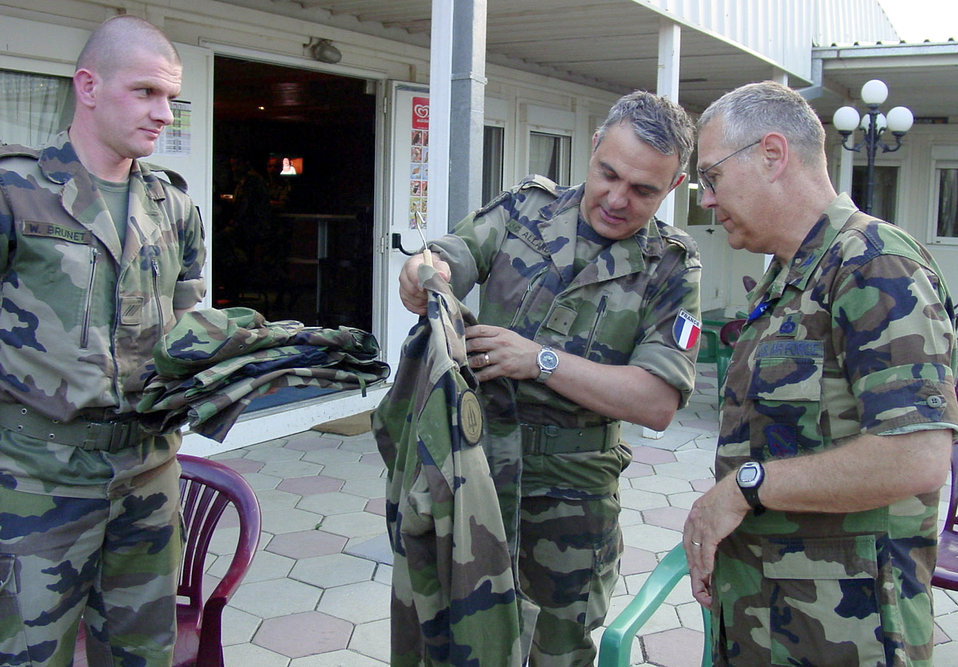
New uniform

PRISTINA, Kosovo -- French army Brig. Gen. Jean-Claude Allard (center) points out some of the unique features of the French army uniform to Col. David Adams after the colonel and French army Sgt. Willy Brunet (left) exchanged uniforms during a ceremony here recently. General Allard is the Kosovo Force assistant chief of staff for operations, and Sergeant Brunet is a signal noncommissioned officer in the French National Intelligence Center. Colonel Adams is the KFOR headquarters senior national representative and is deployed from Cheyenne Mountain, Colo.